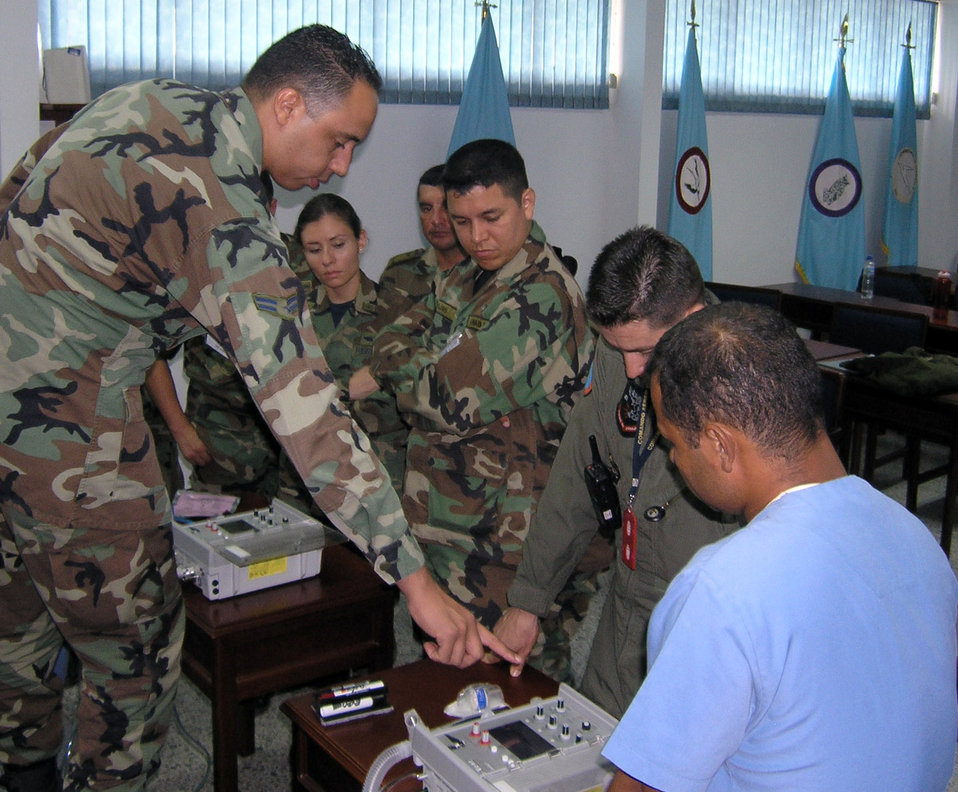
Airman helping to lead way during Colombia mission

Airman 1st Class Edgardo Sanchez de Jesus instructs participants on the functions of the an impact transport ventilator during an International Aeromedical Evacuation Critical Care Transport Course held in Colombia Aug. 15. Airman Sanchez de Jesus is a cardiopulmonary technician with the 759th Surgical Operations Squadron at Lackland Air Force Base, Texas.